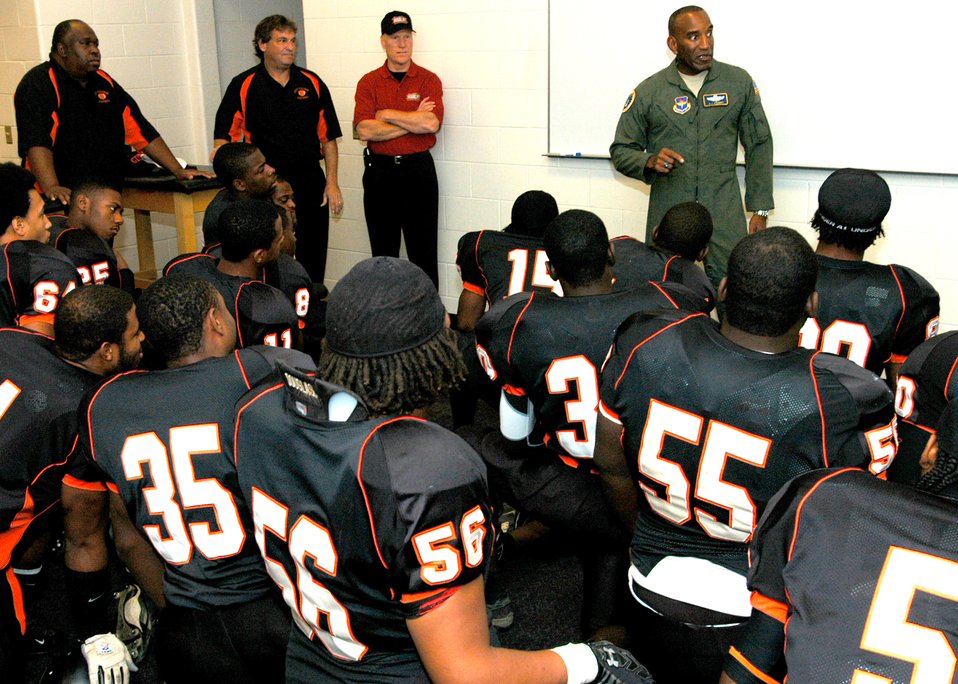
General shares game plan for success

Brig. Gen. Alfred J. Stewart gives a pregame pep talk to the Baltimore City College High School football team Nov. 8 at M&T Bank Stadium in Baltimore. A Class of 1977 Baltimore Polytechnic Institute High School alumni, General Stewart shared inspirational words with both teams before the game and he presented a $500 college scholarship to a member of both high schools. General Stewart is the Air Force Recruiting Service commander.